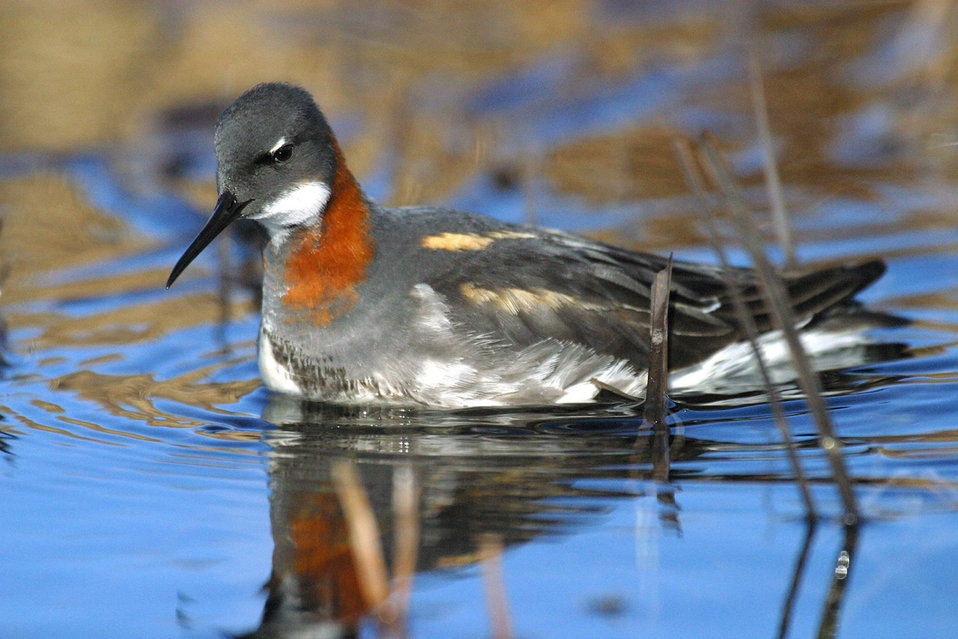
red-necked phalarope

Blackwater National Wildlife Refuge, MD